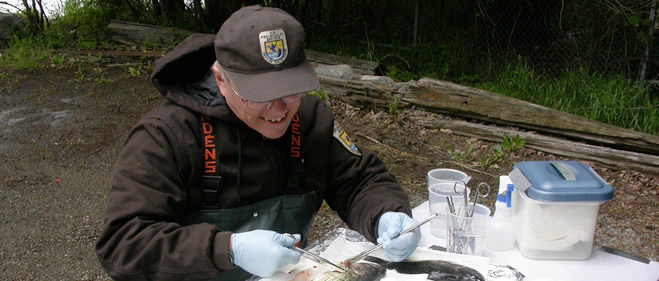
Staff analyzing fish - Olympia Fish Health Center